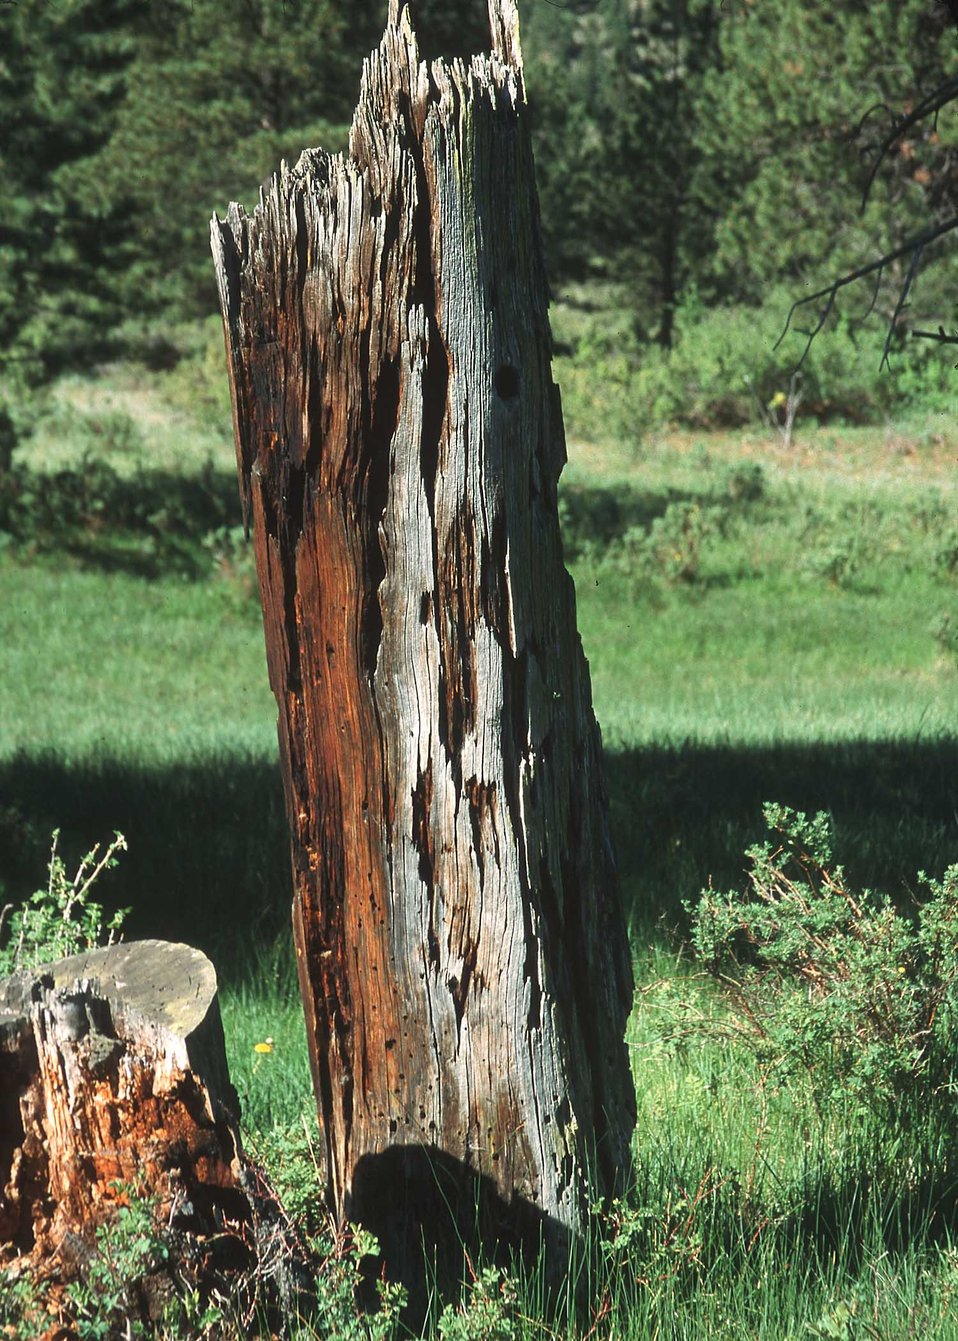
Stump with Bear Claw marks.